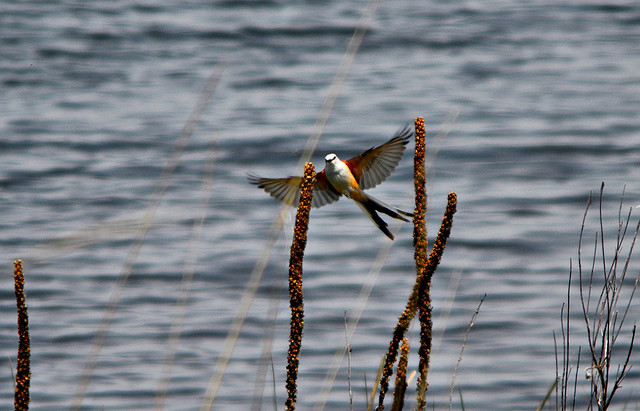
scissortail flycatcher

Malheur National Wildlife Refuge